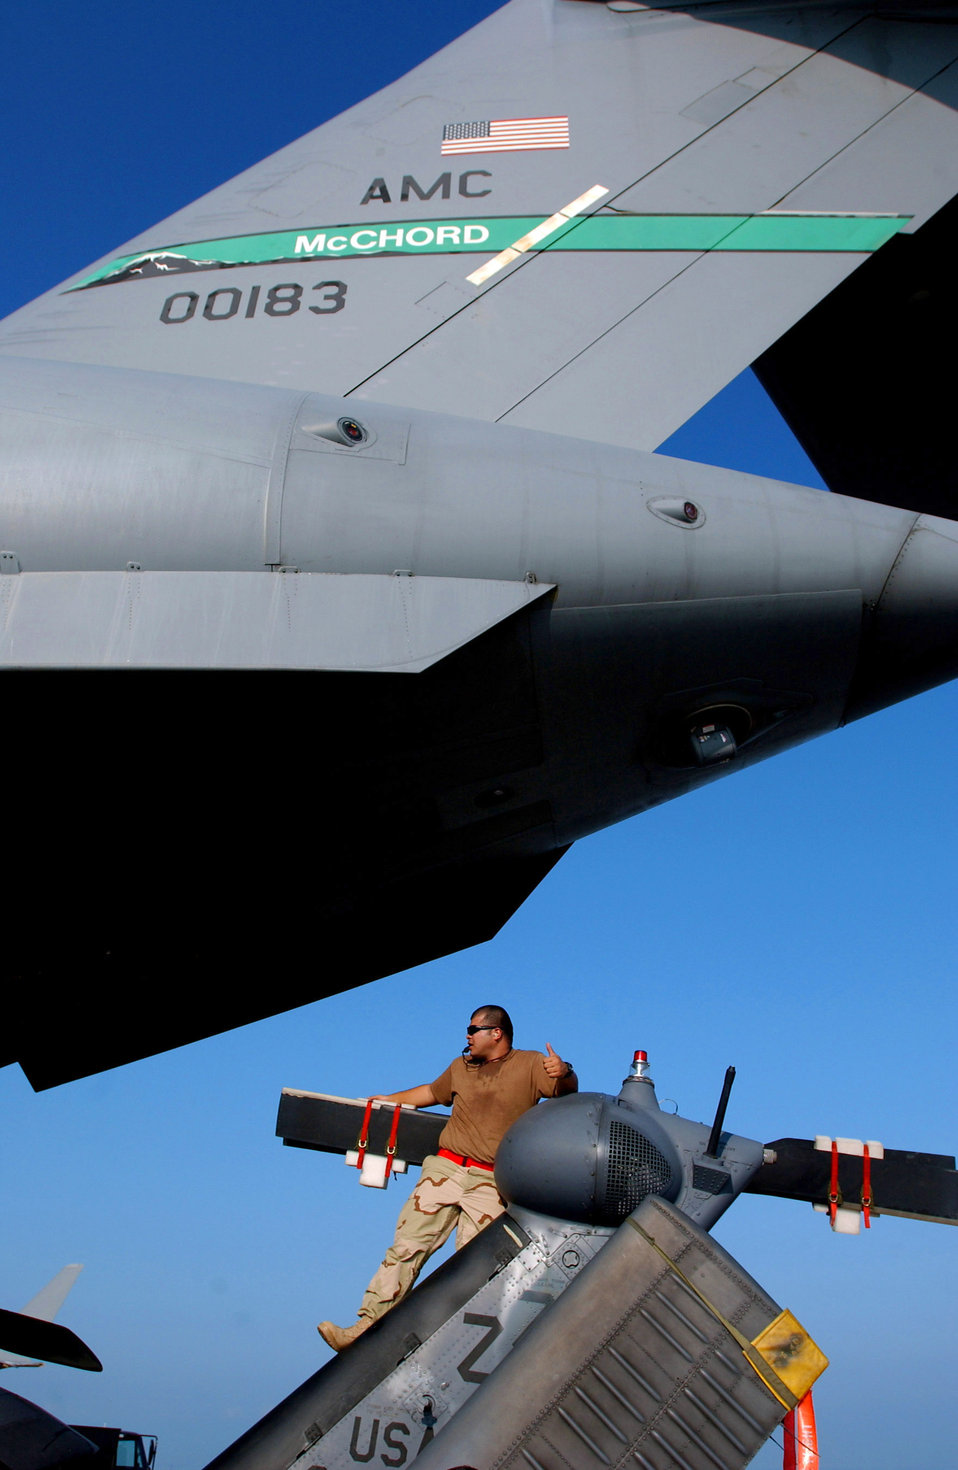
A wild ride

Tech. Sgt. Jesse Meno keeps a watchful eye from the tail of an HH-60 Pave Hawk helicopter July 30 as it is loaded onto a C-17 Globemaster III at Kadena Air Base, Japan, for transport to Kandahar, Afghanistan.